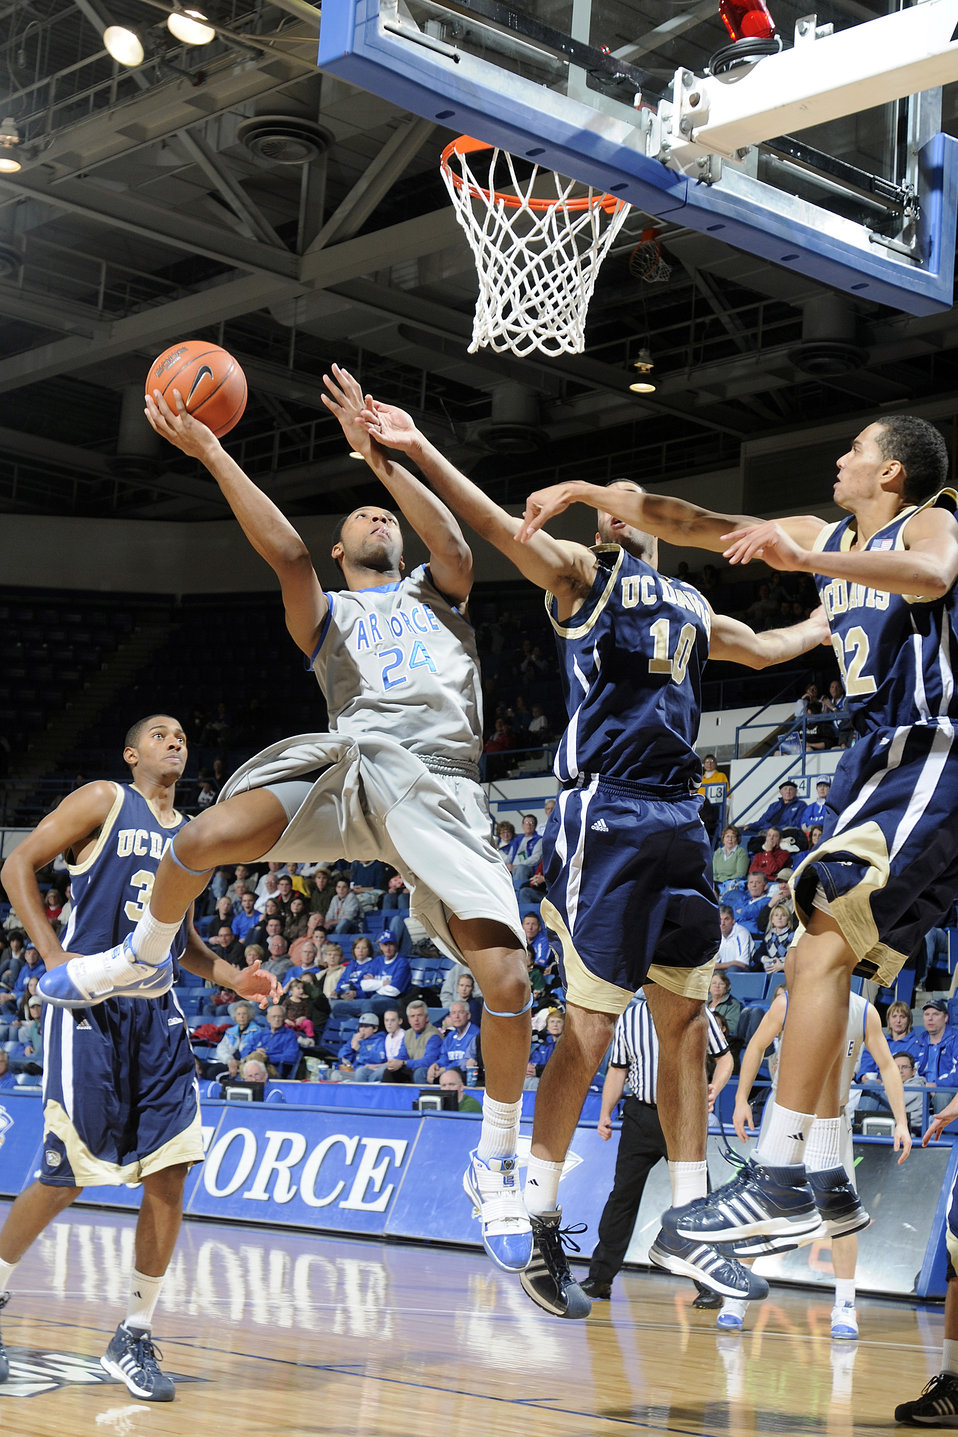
Falcons Defeat UC Davis Aggies

Junior forward Derek Brooks drives past three University of California-Davis defenders for a score to help the Falcons defeat the Aggies 69-57 Dec. 22, 2009, at the U.S. Air Force Academy, Colo.